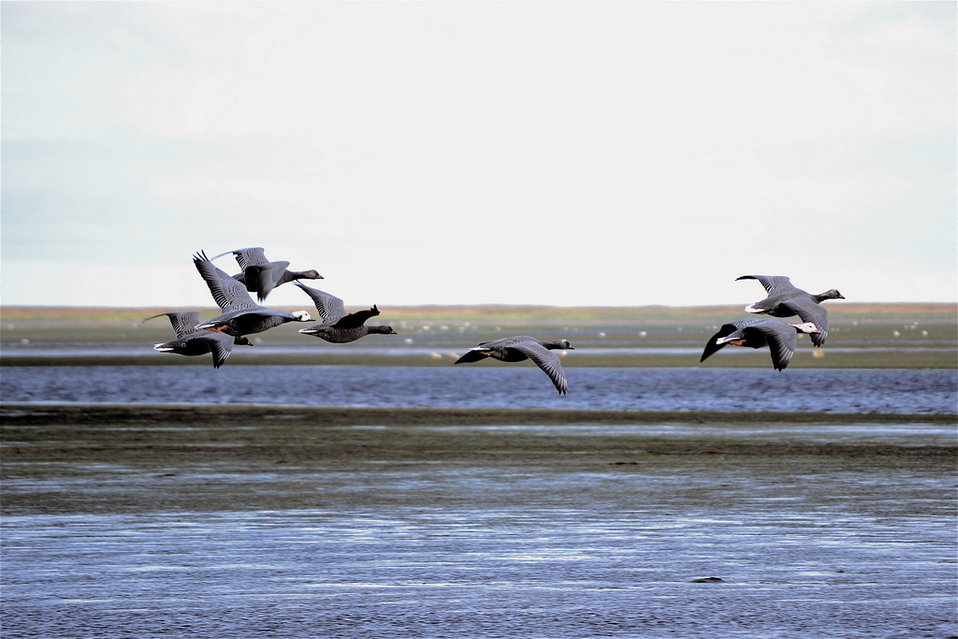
October

emperor geese in flight
Izembek National Wildlife Refuge, AK